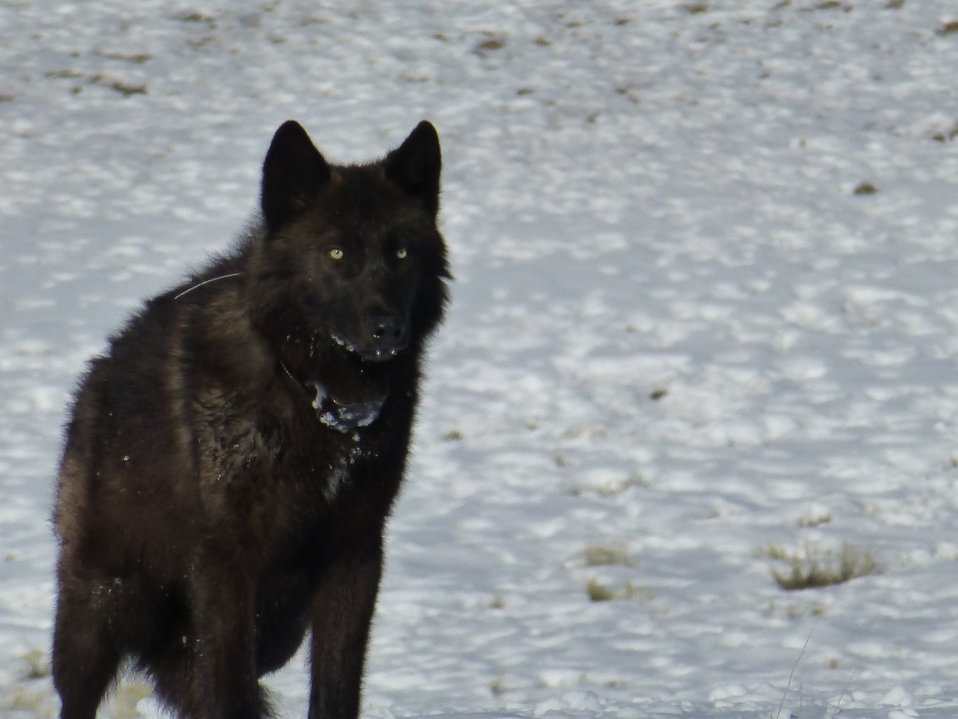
Time to Head Back to the Pack

A black pup gets back up on its feet after the immobilization drug has worn off, approximately three hours after it was darted.